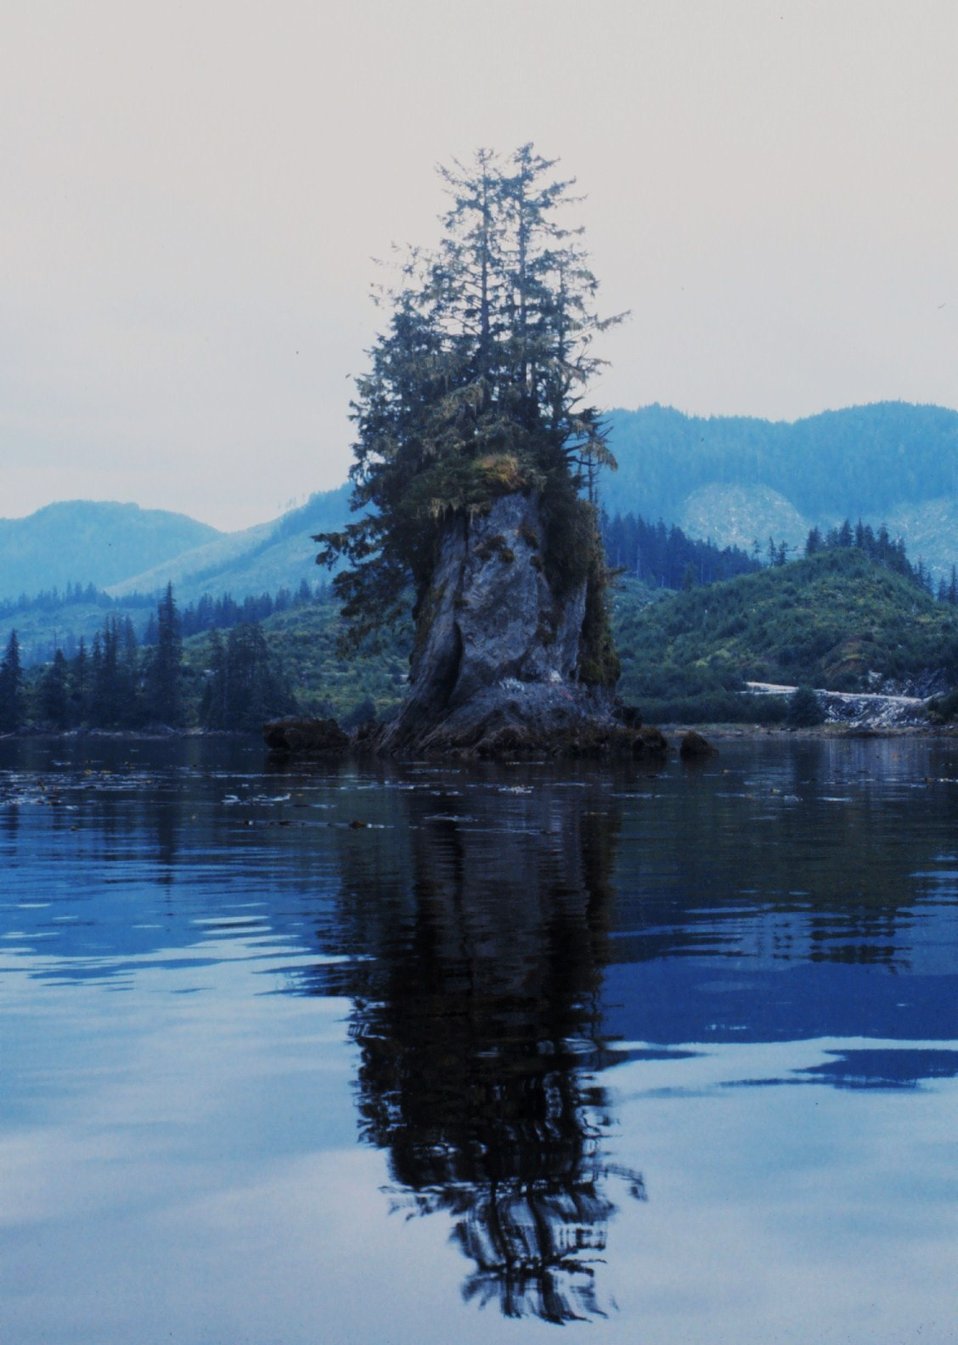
Small islet in Hobart Bay on east side of Stephens Passage